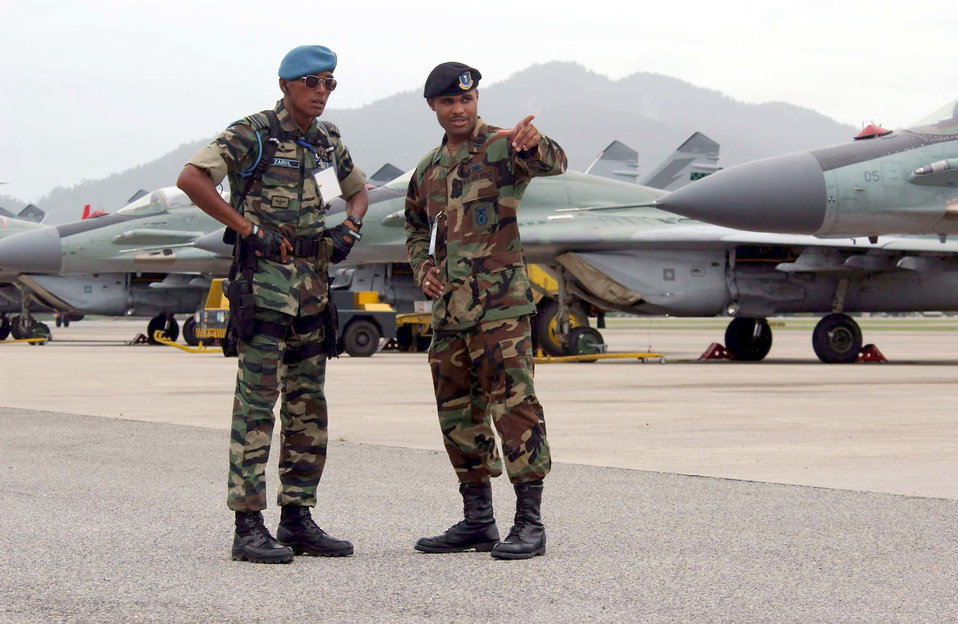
LIMA 03

LANGKAWI, Malaysia -- First Lt. Jalaal Green (right) and Capt. Ibrahim Hisham Zairul discuss flightline security during the Langkawi International Maritime and Aerospace 2003 exhibition here. Green is from the 613th Contingency Response Group at Andersen Air Force Base, Guam, and Zairul is with the Malaysian air force. LIMA is one of the premier defense trade shows in the world and this year featured defense-related technology from more than 800 companies in some 40 nations.